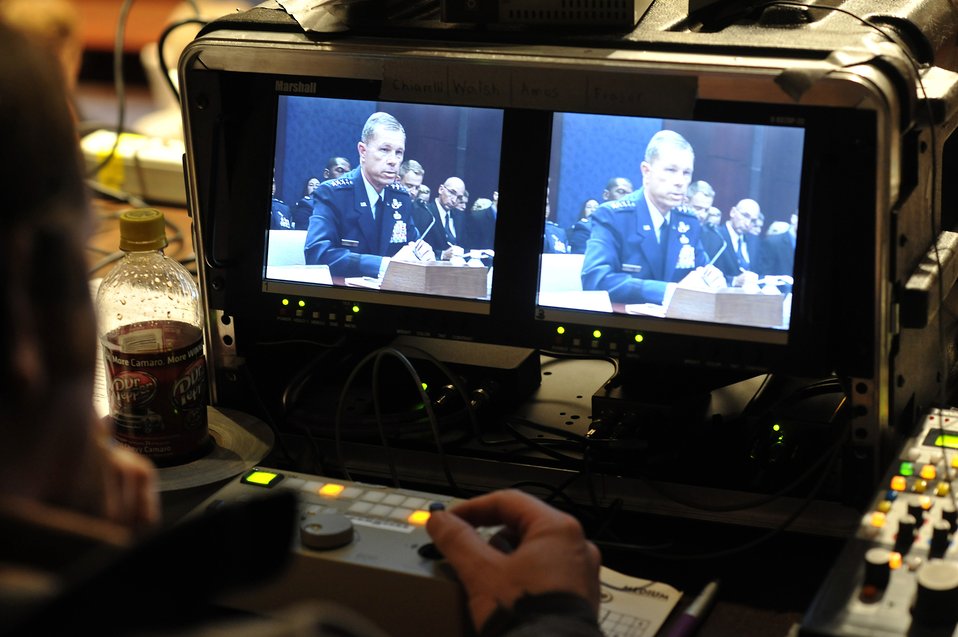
Vice chief of staff testifies to lawmakers about suicide prevention programs

Air Force Vice Chief of Staff Gen. William Fraser, on screens, testifies before the House Armed Services Committee July 29 on suicide prevention within the military. Each services' vice chief appeared at the U.S. Capitol on behalf of his service-specific programs.